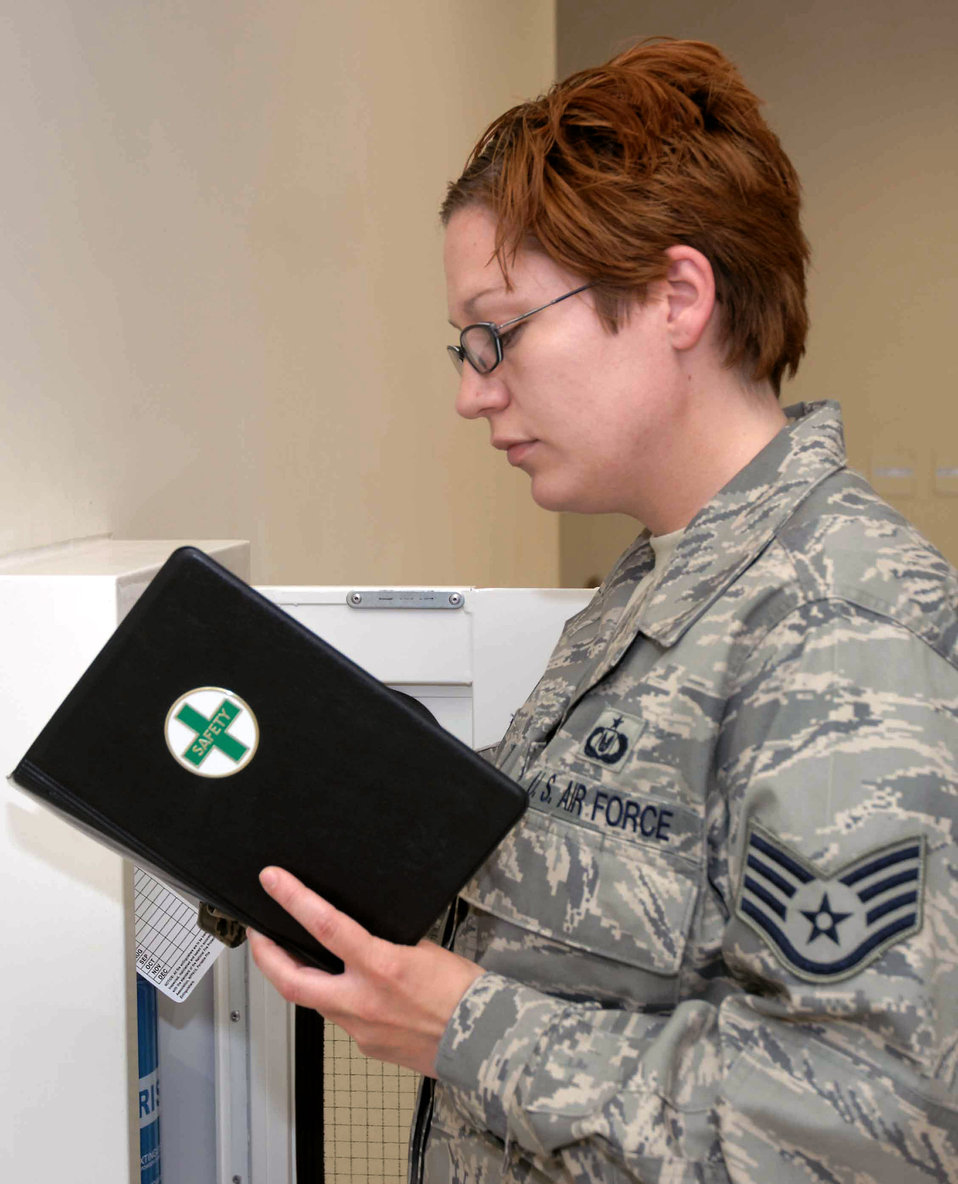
101 Critical Days of Summer - 365 days a year

Staff Sgt. Mary Circe checks the expiration and inspection tags on a fire extinguisher June 13 at a base in Southwest Asia. Sergeant Circe is with the 379th Air Expeditionary Wing Ground Safety office. Part of safety office member's duties include frequent spot inspections to ensure units are complying with wing safety regulations.